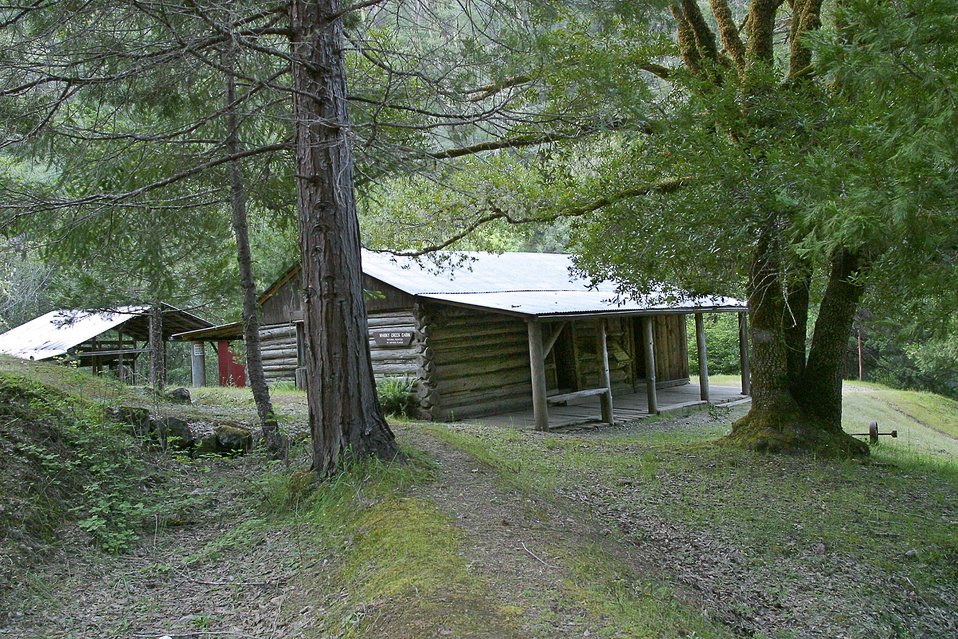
Whisky Creek Cabin along the Wild section of the Rogue River from Grave Creek to Foster Bar. 3100 cfs at Grants Pass and 5300 at Agness.